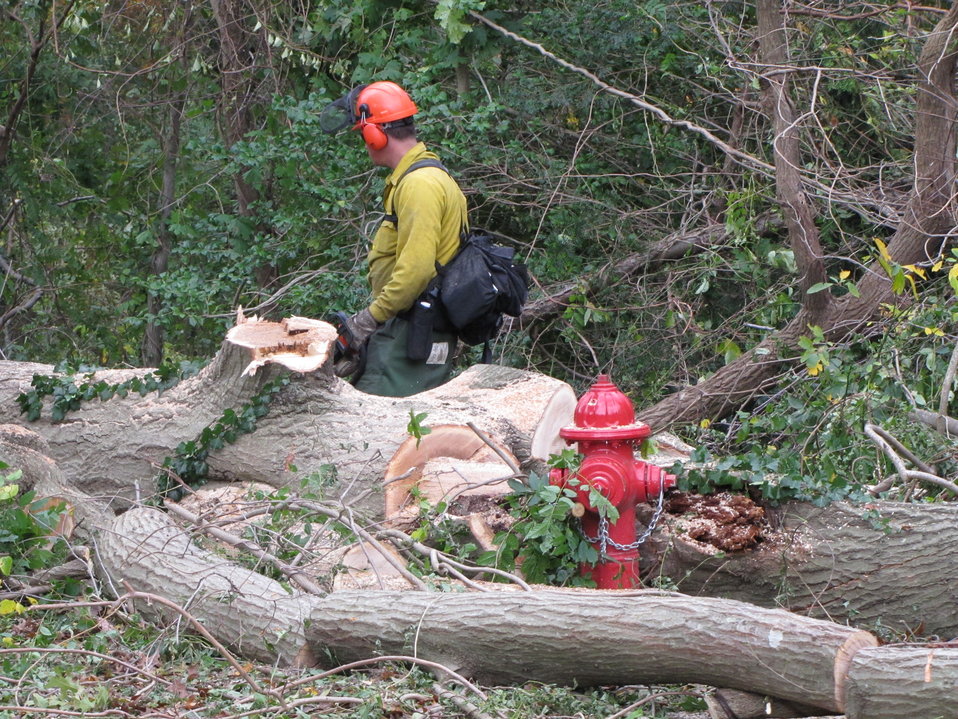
Tree removal at Target Rock National Wildlife Refuge (NY)

Sawyer works to remove felled tree that narrowly missed falling on a newly installed fire hydrant.